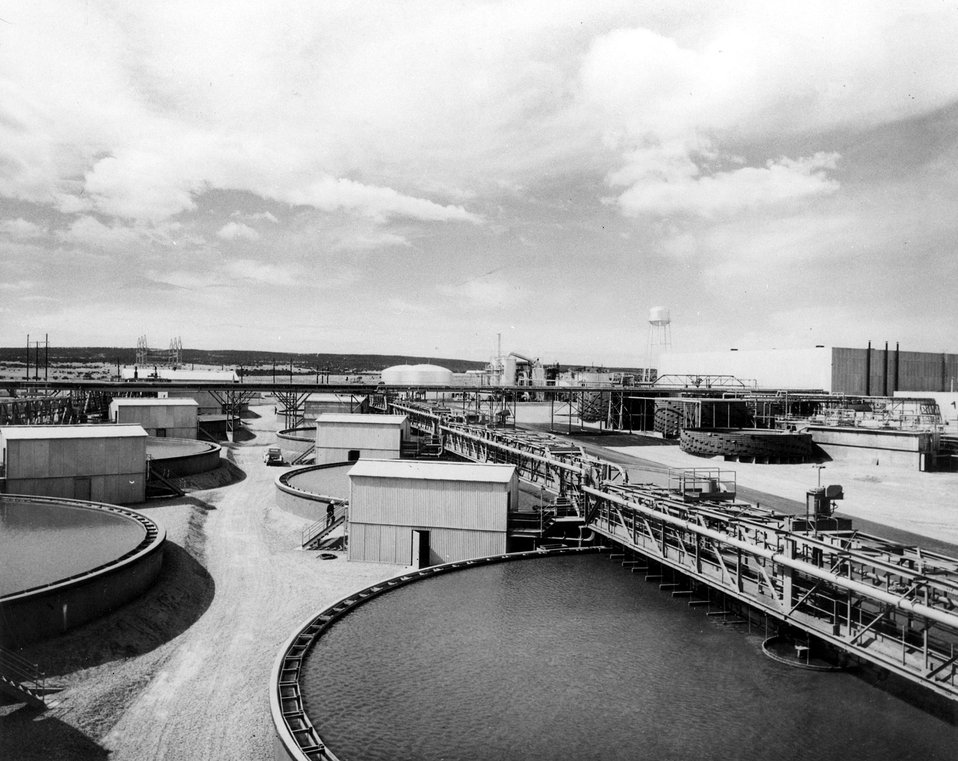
Thickener tanks at the Kermac mill. c. 1964